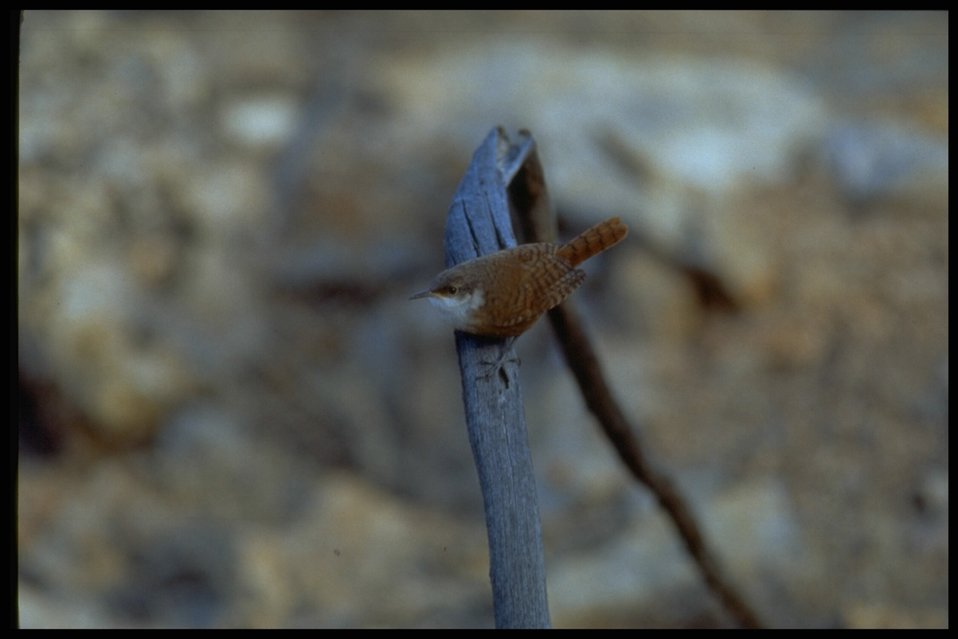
A bird resting on a branch at the Grand Canyon-Parashant National Monument.